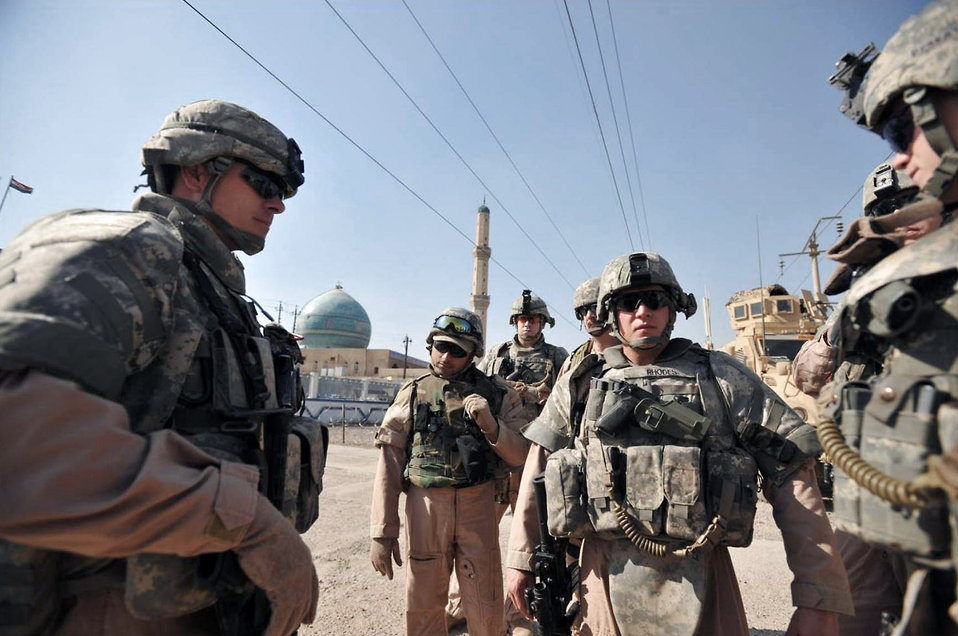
On patrol in Baghdad

Airmen take a break while on a police transition team joint patrol with Iraqi police stop and update one another as they prepare to continue movement Nov. 7 in the Al-Bayaa community of southern Baghdad, Iraq. The Airmen are assigned to the 732nd Expeditionary Security Forces Squadron Det. 3 and attached to the Army's 716th Military Police Battalion, 18th MP Brigade.